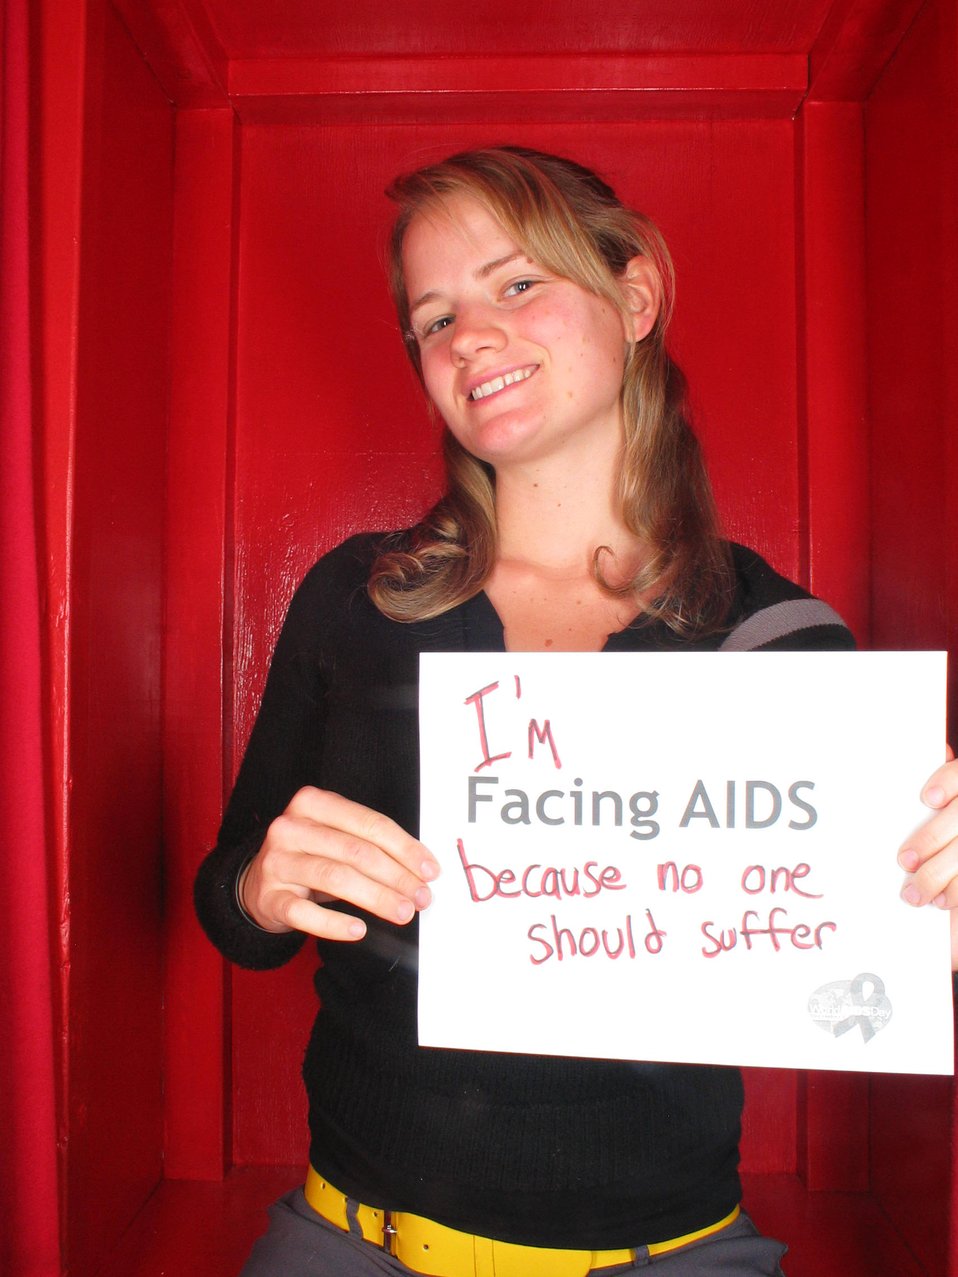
I'm Facing AIDS because no one should suffer